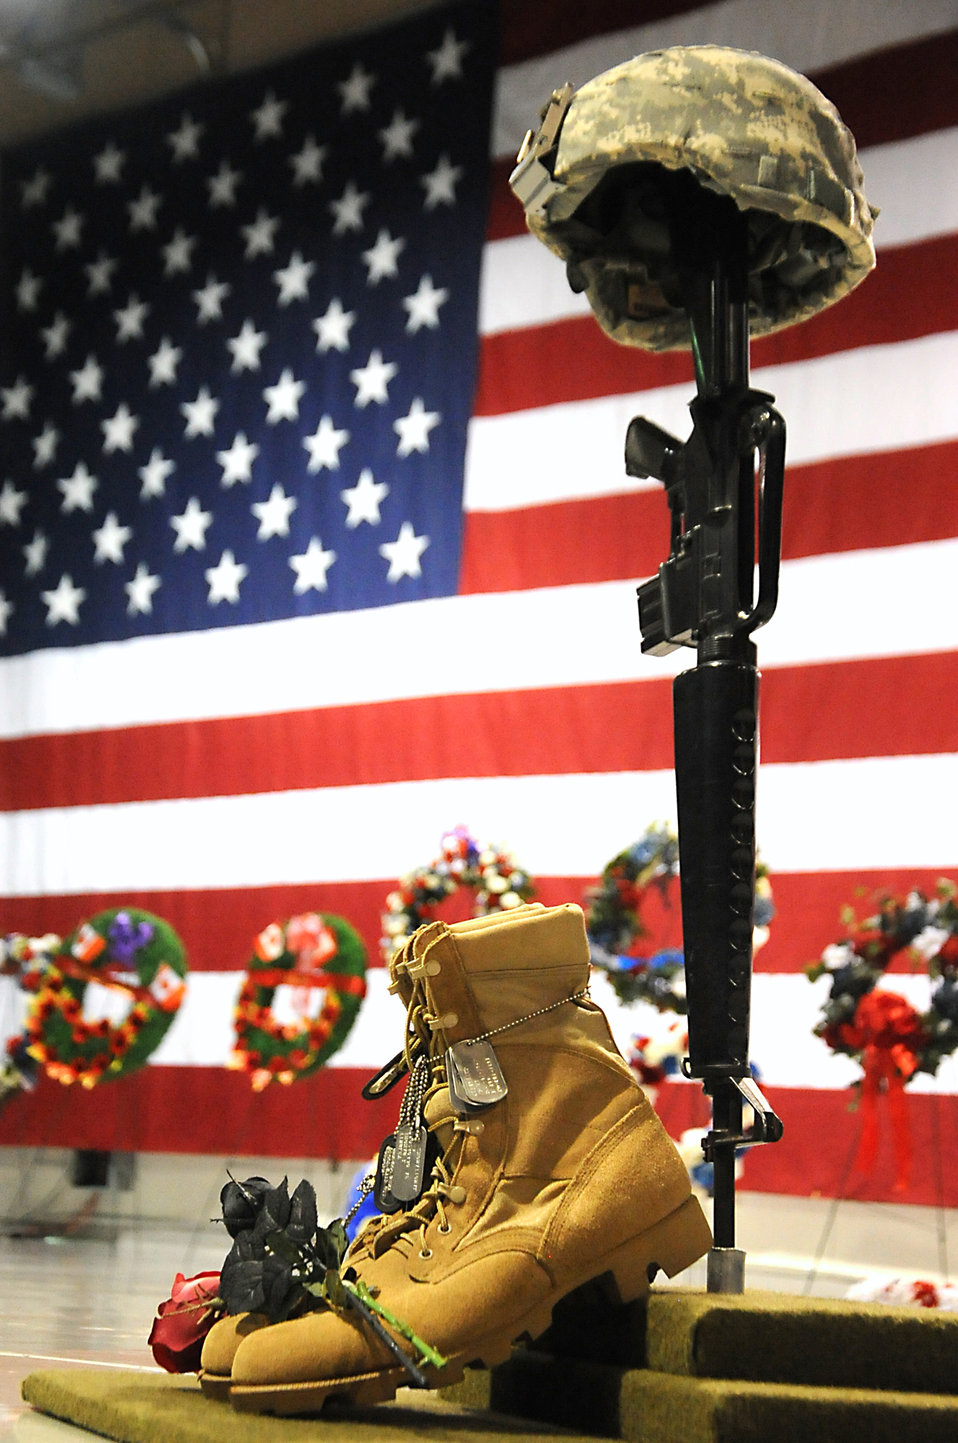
Always remember

Fallen warriors are remembered during Remembrance Day at the Alaska National Guard armory Nov.11, 2011, at Joint Base Elmendorf-Richardson, Alaska. The first Remembrance Day honors veterans who were killed in the line of duty since World War I.